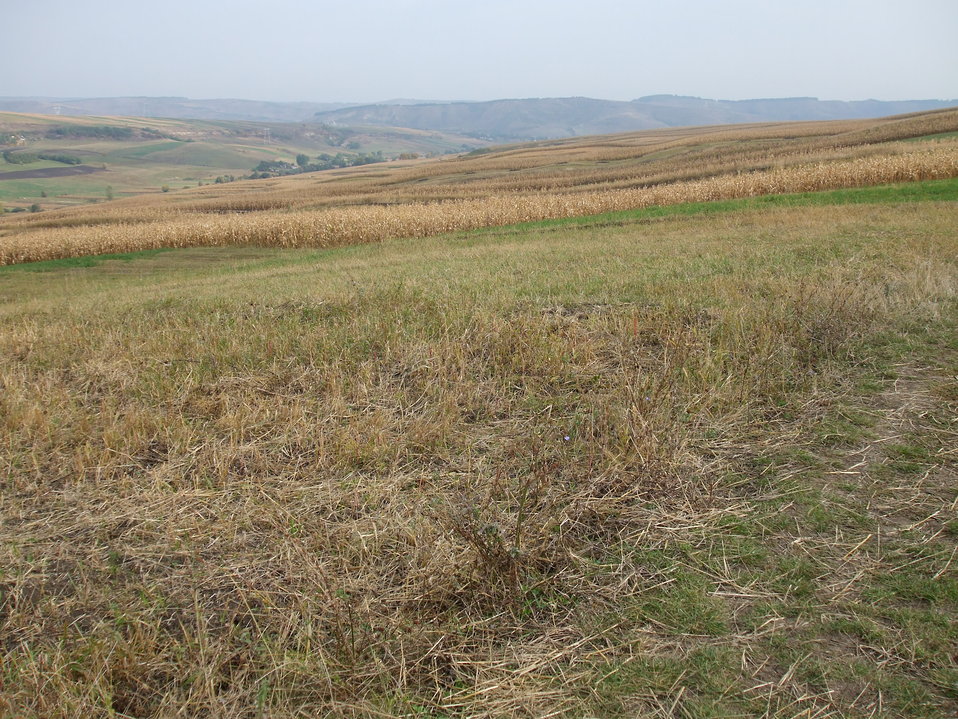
Română: Imagini-Damburile,jud.Cluj